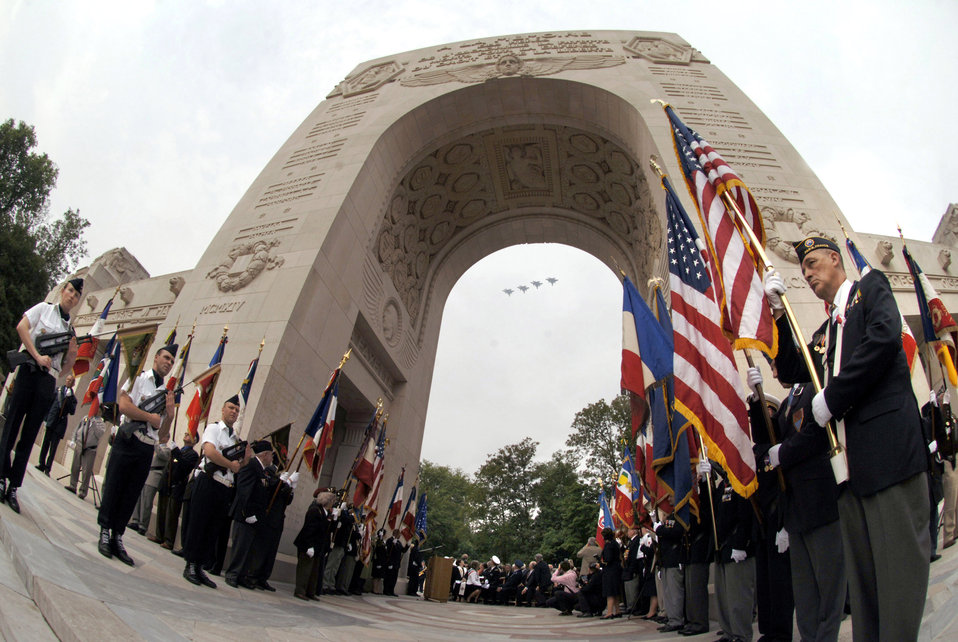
Early combat aviators honored

Military fighters fly over a ceremony at the Lafayette Memorial outside Paris to honor the United States' first combat aviators who comprised the Lafayette Escadrille. The all-American squadron of volunteers flew under the French flag during World War I.